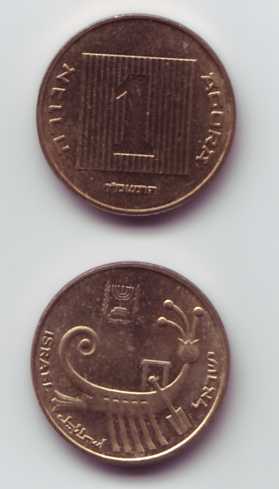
1 old Agora coin - התשמ'ז